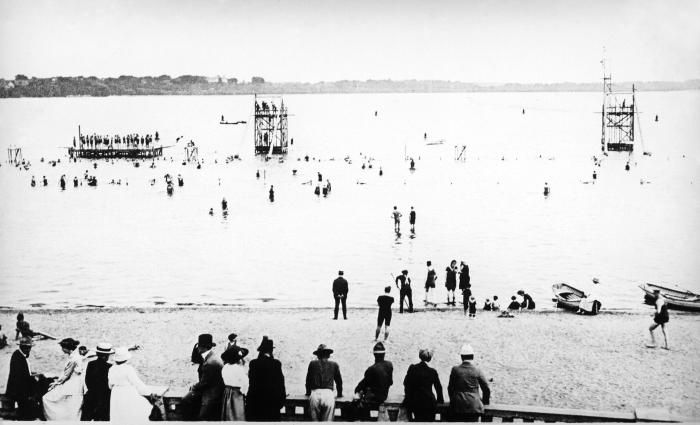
This historic 1917 photograph of the Lake Calhoun, Minneapolis public bathing beach, offered a view of the water front. It was taken during a Minnesota Department of Health study of the state's public bathing areas.